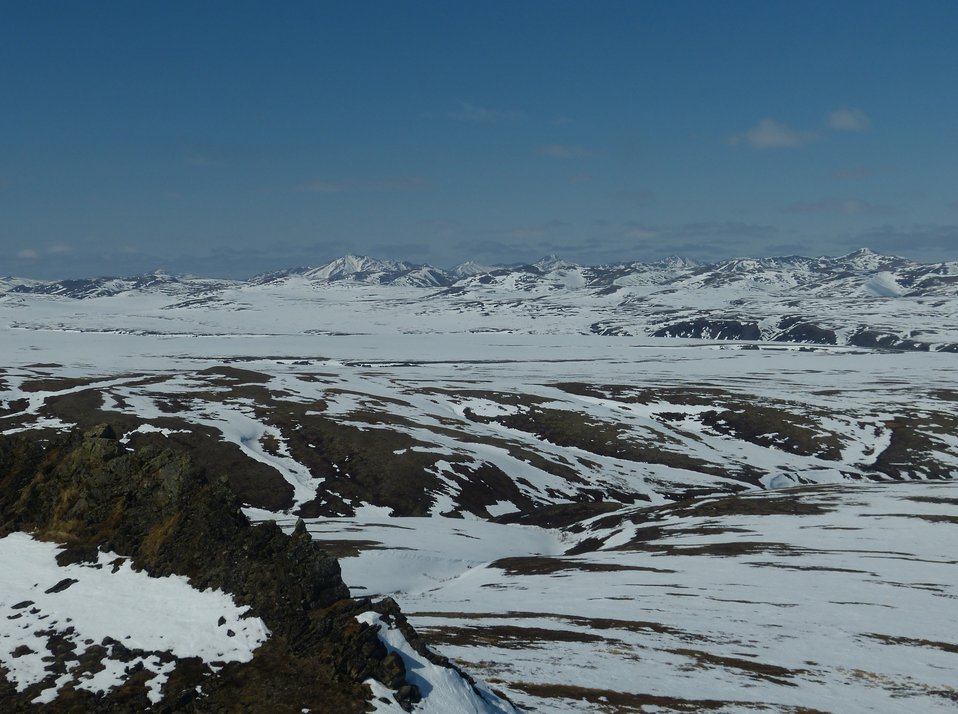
Kilbuck Mountains May2013 KSowl

Cliff-nesting raptor survey, Kilbuck Mountains, Yukon Delta National Wildlife Refuge

Photo credit: Kristine Sowl,
USFWS, YDNWR